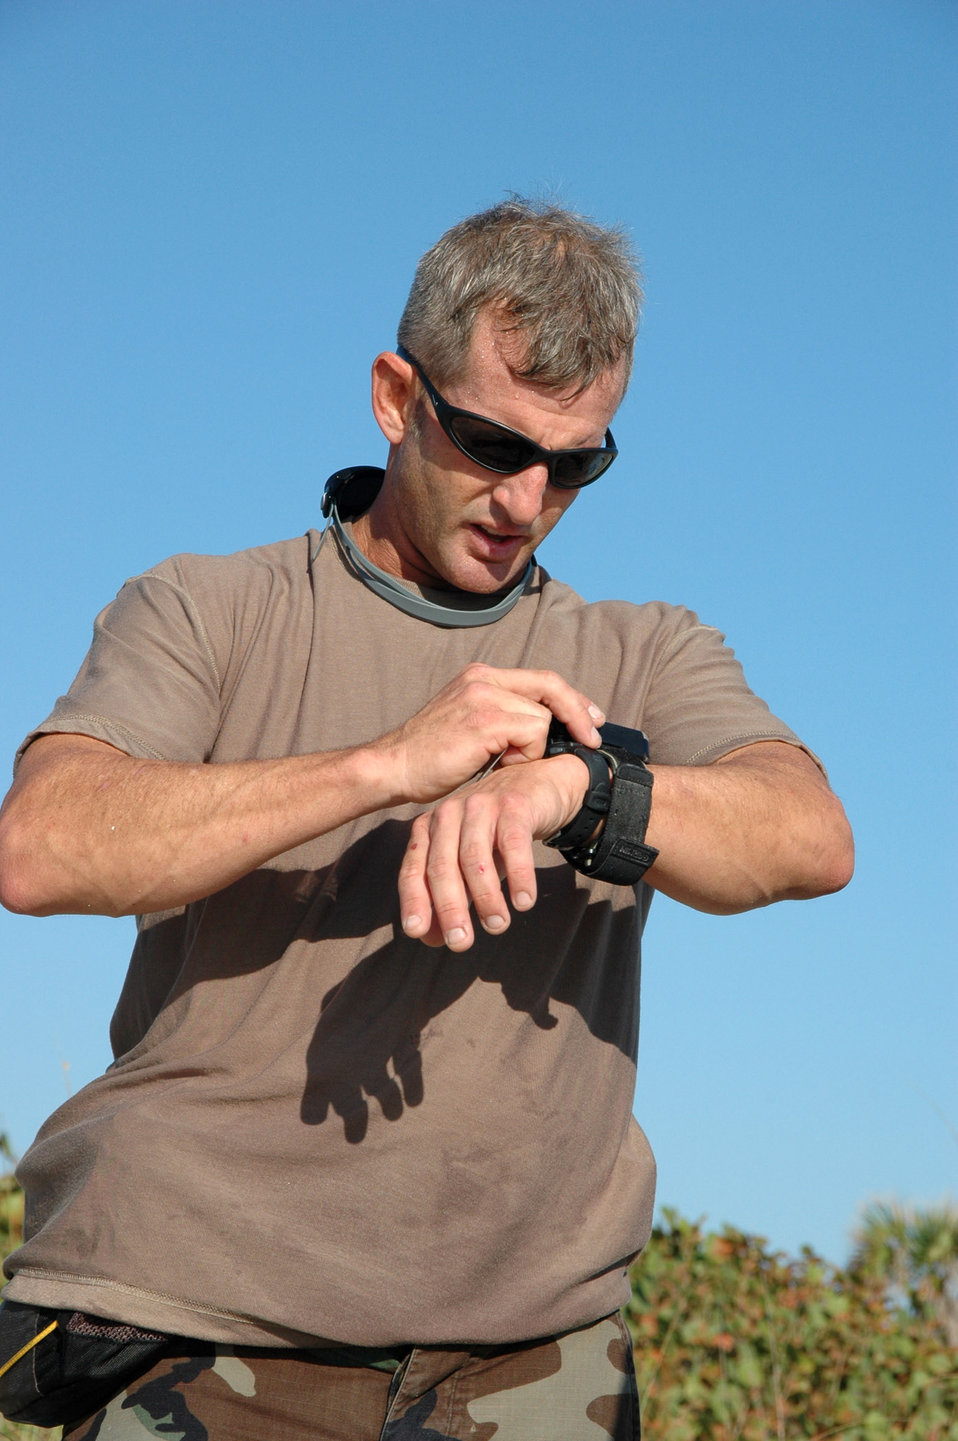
Mission Monster Mash builds camaraderie

Master Sgt. Christopher Seinkner, a pararescueman with the 308th Rescue Squadron, inputs coordinates into a GPS locator during an exercise at Patrick Air Force Base, Fla.